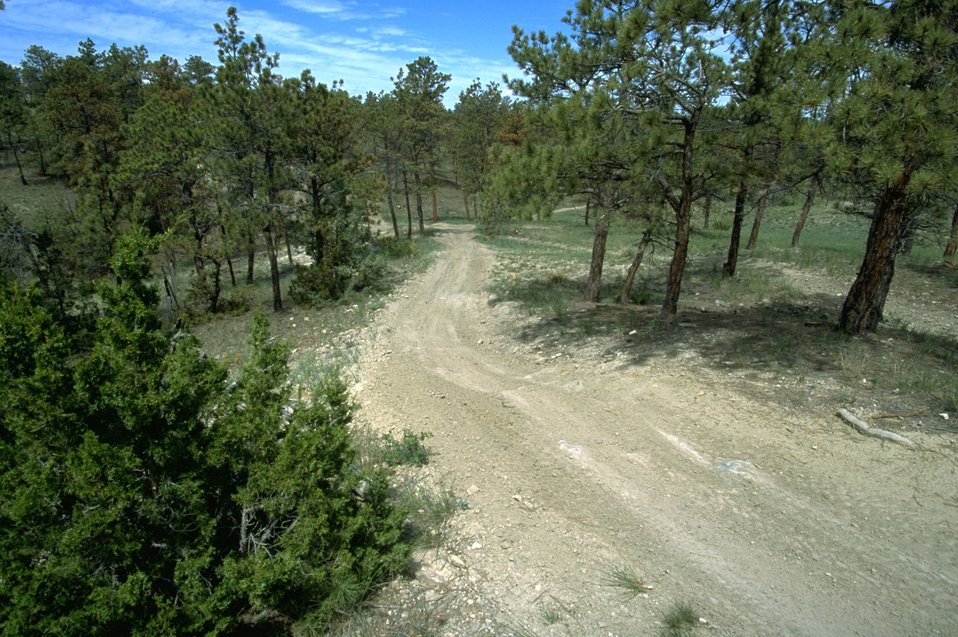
Off Highway Vehicle (OHV) trail in Area 1 in the Shepherd Recreation Area